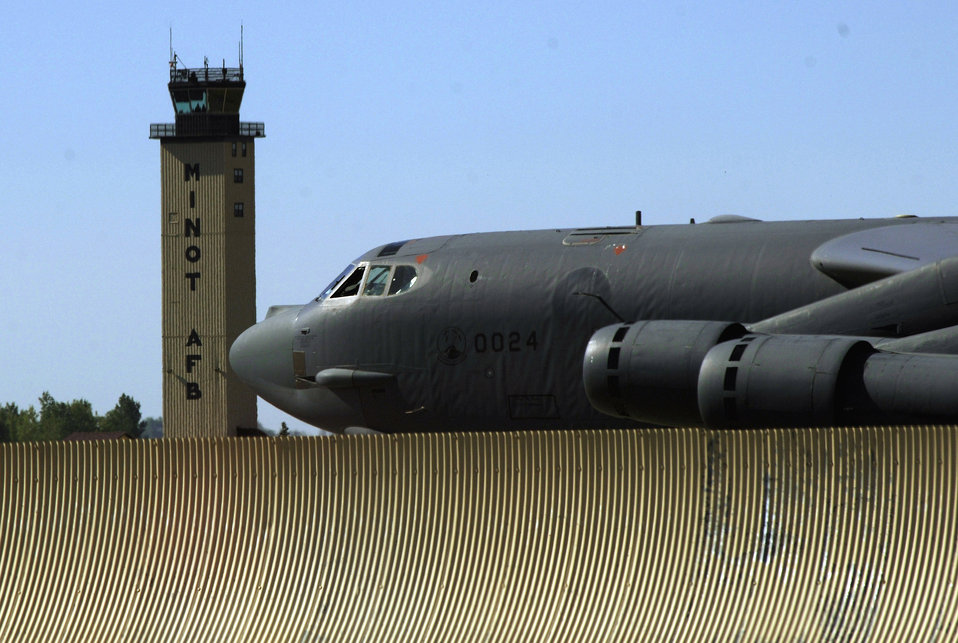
B-52 operations

A B-52 Stratofortress taxis to the runway at Minot Air Force Base, N.D., Aug. 21. The bomber from the 5th Bomb Wing conducted a training mission in the skies over North Dakota.